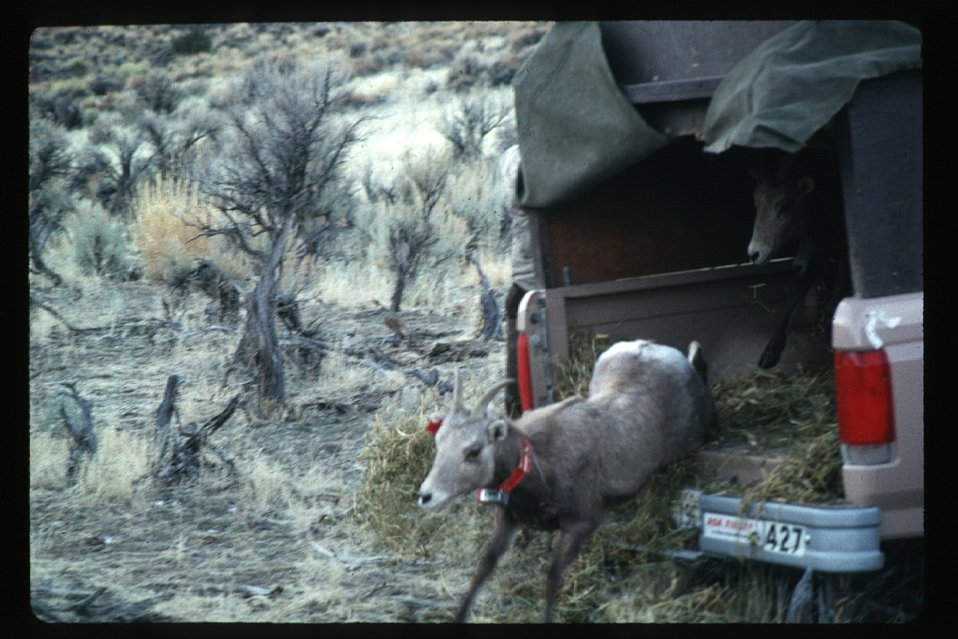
Bighorn Sheep Wildlife LSRD Lower Snake River District